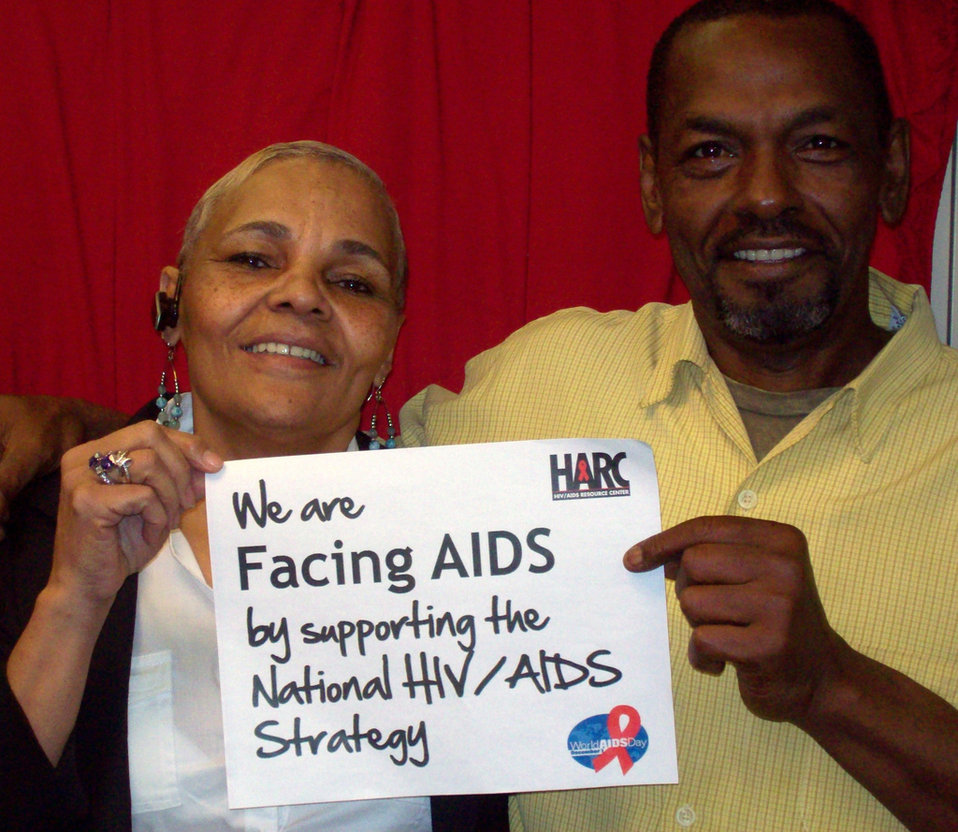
We are Facing AIDS through NHAS-28